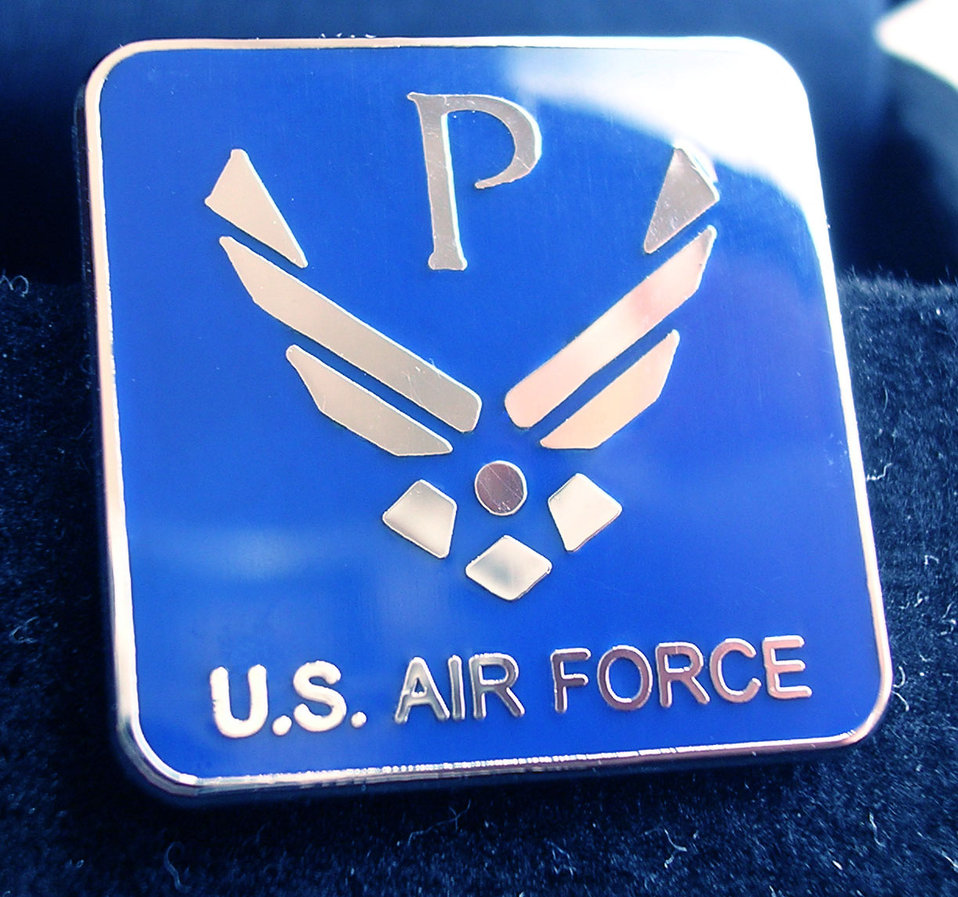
Parent pin

FILE PHOTO -- Airmen can now sign up to have a